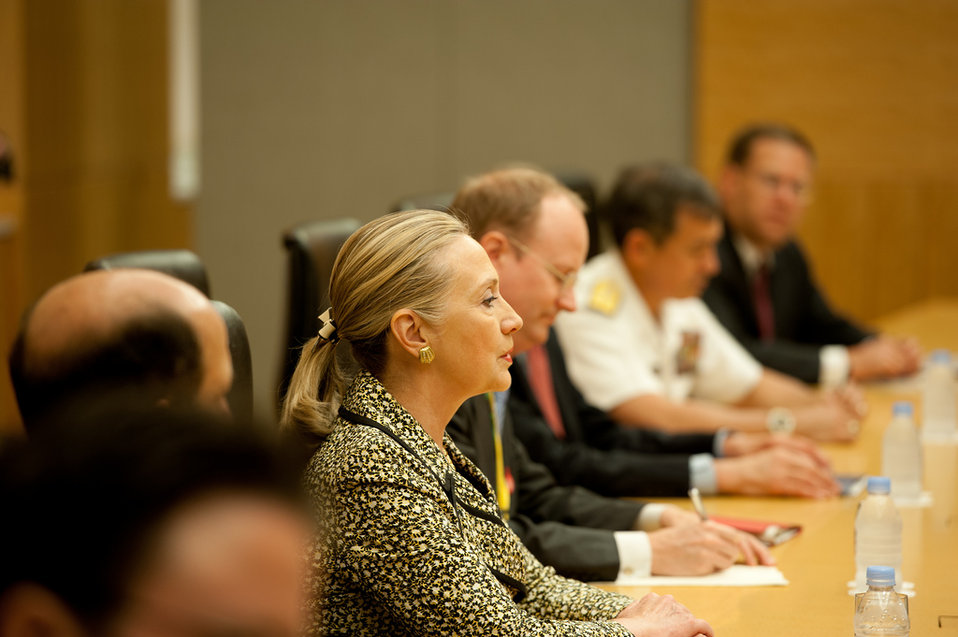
Secretary Clinton's Bilateral Meeting With Japan

U.S. Secretary of State Hillary Rodham Clinton in a bilateral meeting with Japan on the sidelines of the Tokyo Conference on Afghanistan in Tokyo, Japan, on July 8, 2012.